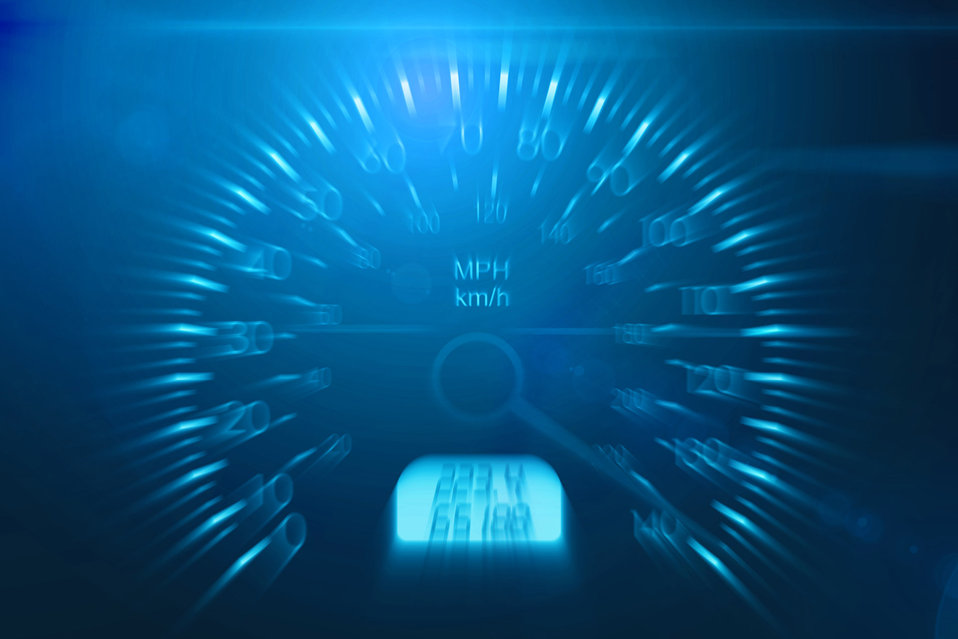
Speed

Speedometer on a blue background.